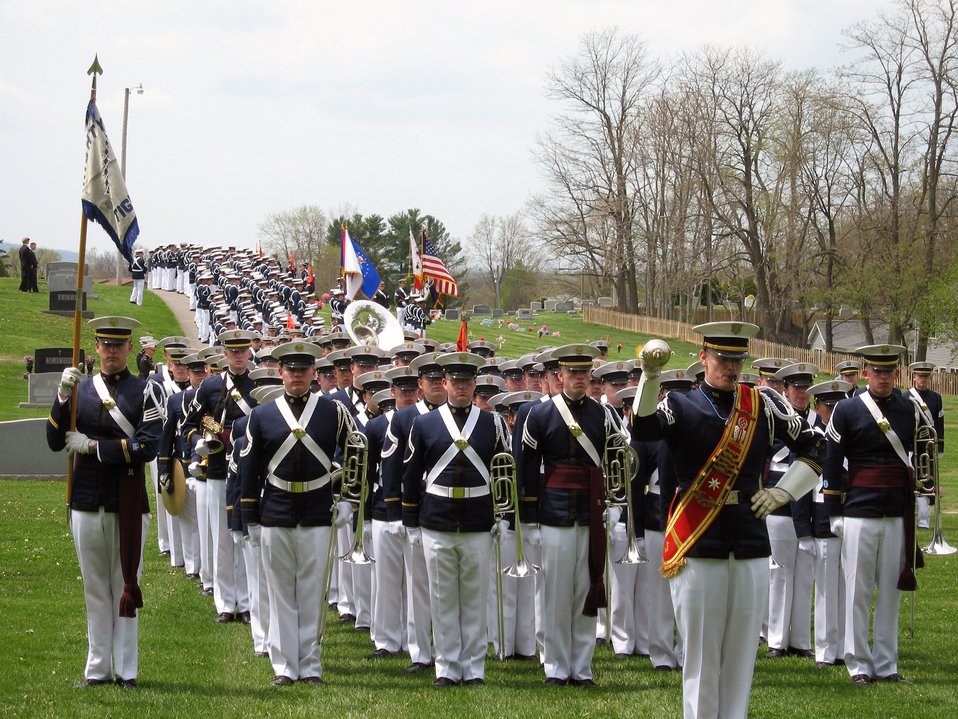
Virginia Tech corps of cadets pay honors to one of their own

The Virginia Tech Corps of Cadets paid honors to one of their classmates in Blacksburg, Va., April 25. Cadet Matthew La Porte, a sophomore in Air Force ROTC Detachment 875 and the Virginia Tech Corps of Cadets, was one of the 32 students and faculty killed during the shooting incident at the school April 16. Cadet La Porte's unit, the Highty-Tighties, prepares to lead the regiment back to the Upper Quad on campus after the cadet's funeral.